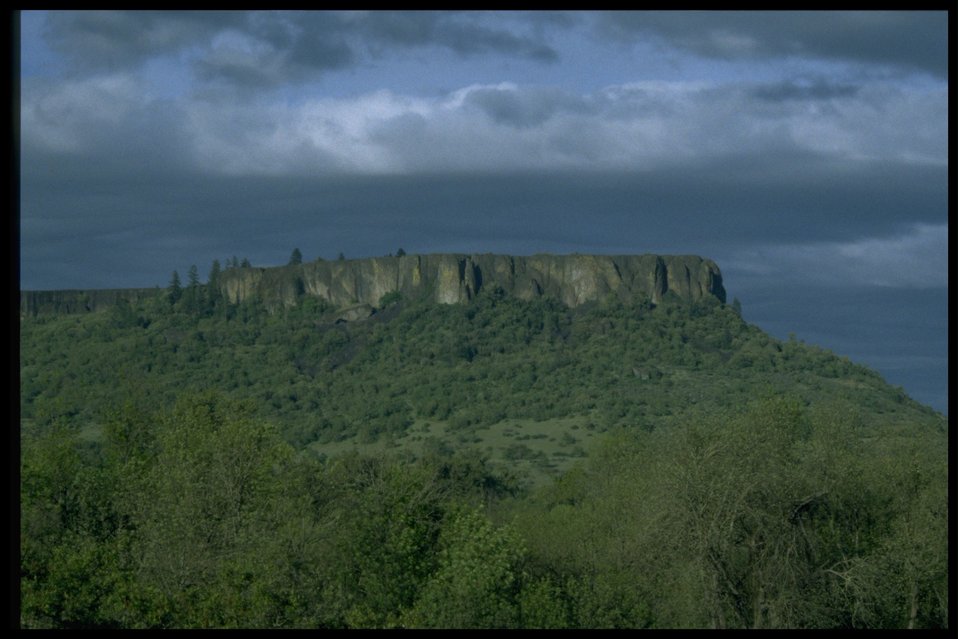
Scenic view of Lower Table Rock.